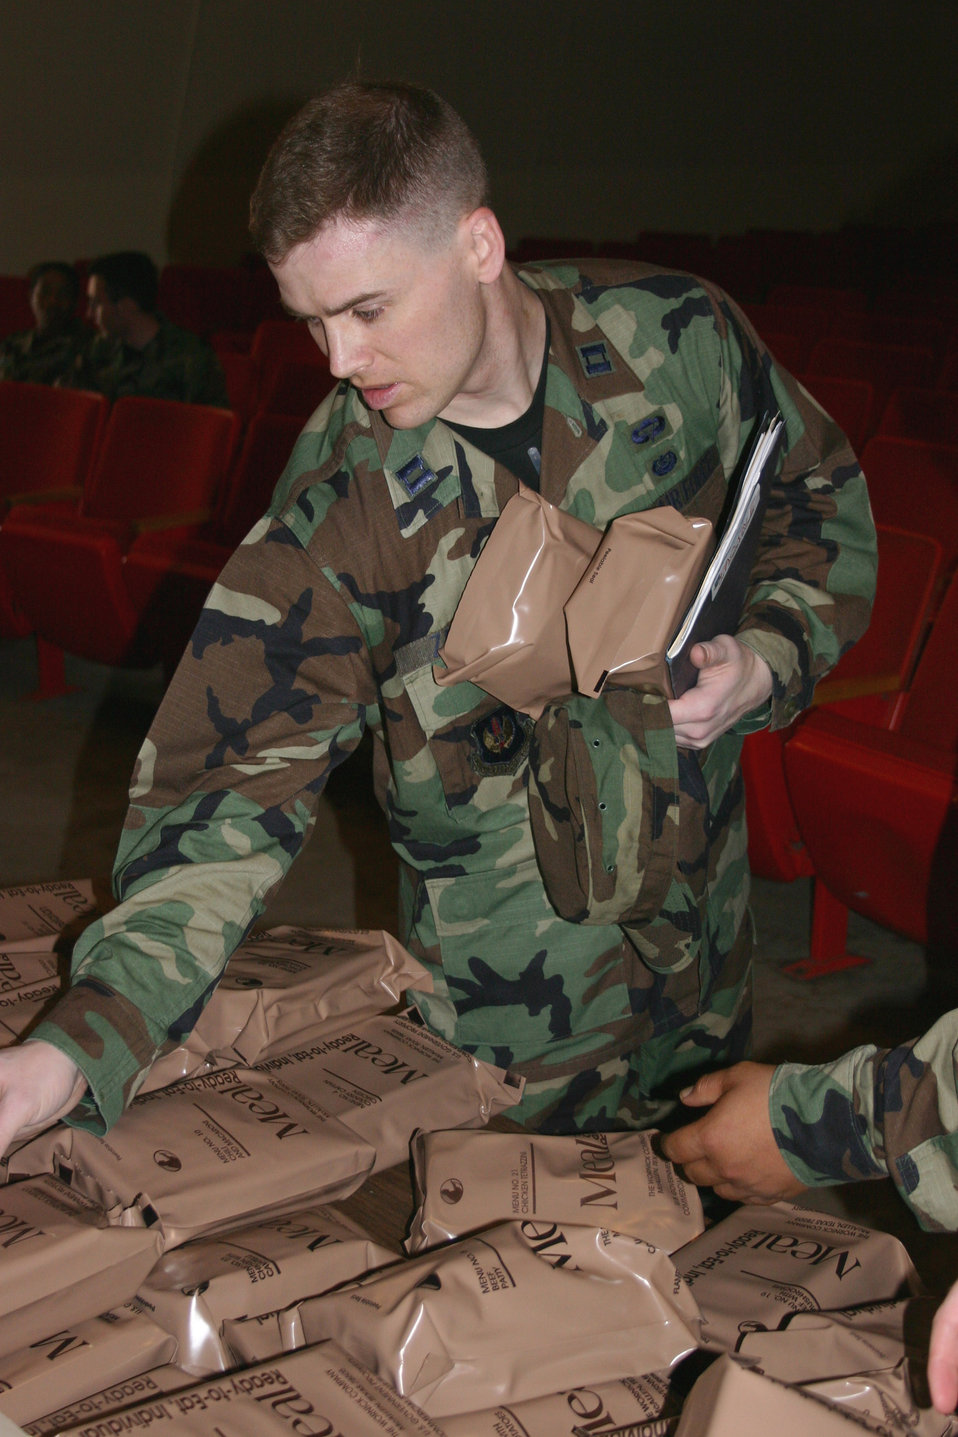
Pacific Joint Legal Exercise

Capt. Robert Zauner selects meals ready-to-eat Sunday, March 5, 2006, to get him through the five-day Pacific Joint Legal Exercise. Captain Zauner is one of nearly 30 legal professionals participating in the exercise at the Pohakuloa Training Area, Hawaii, this week. He is with the 435th Air Base Wing at Ramstein Air Base, Germany.